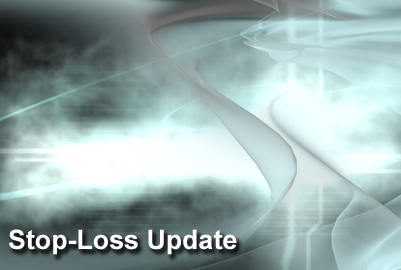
Stop-Loss

Defense Department officials put a new policy into effect Jan. 5 that modifies eligibility for the Stop-Loss Program.